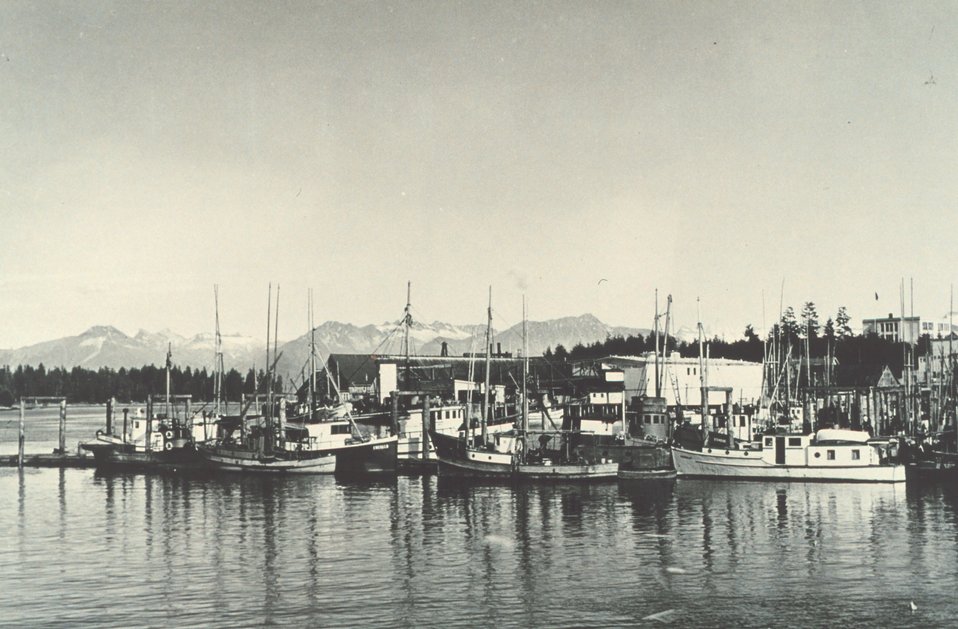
Commercial fishing boats at Petersburg. F&WS 12,227.